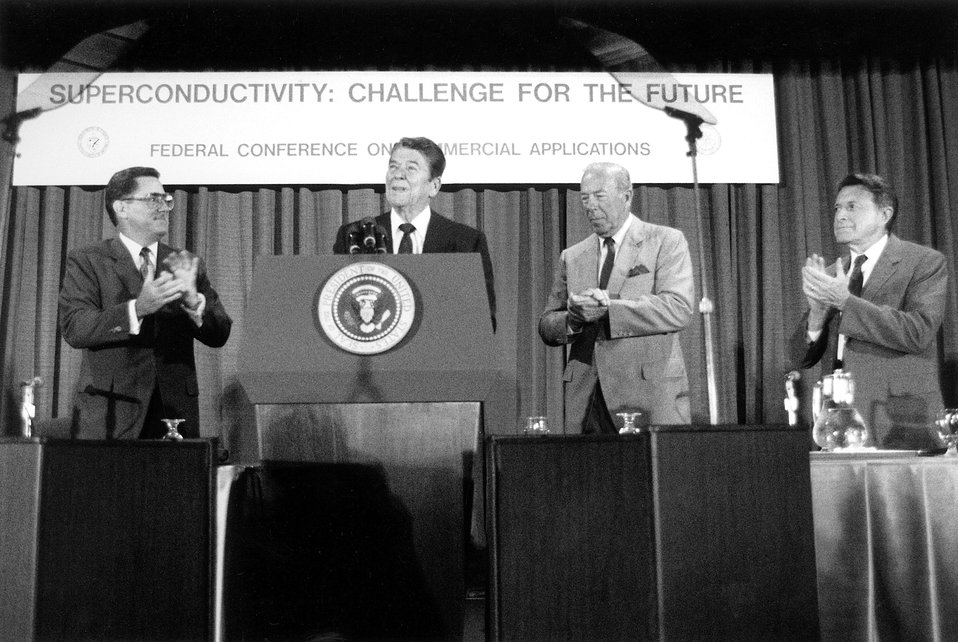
President Ronald Reagan speaks at Superconductivity Conference July 1987 with Secretary of Energy Herrington, Secretary of State Schultz and Secretary of Defense Weinberger .